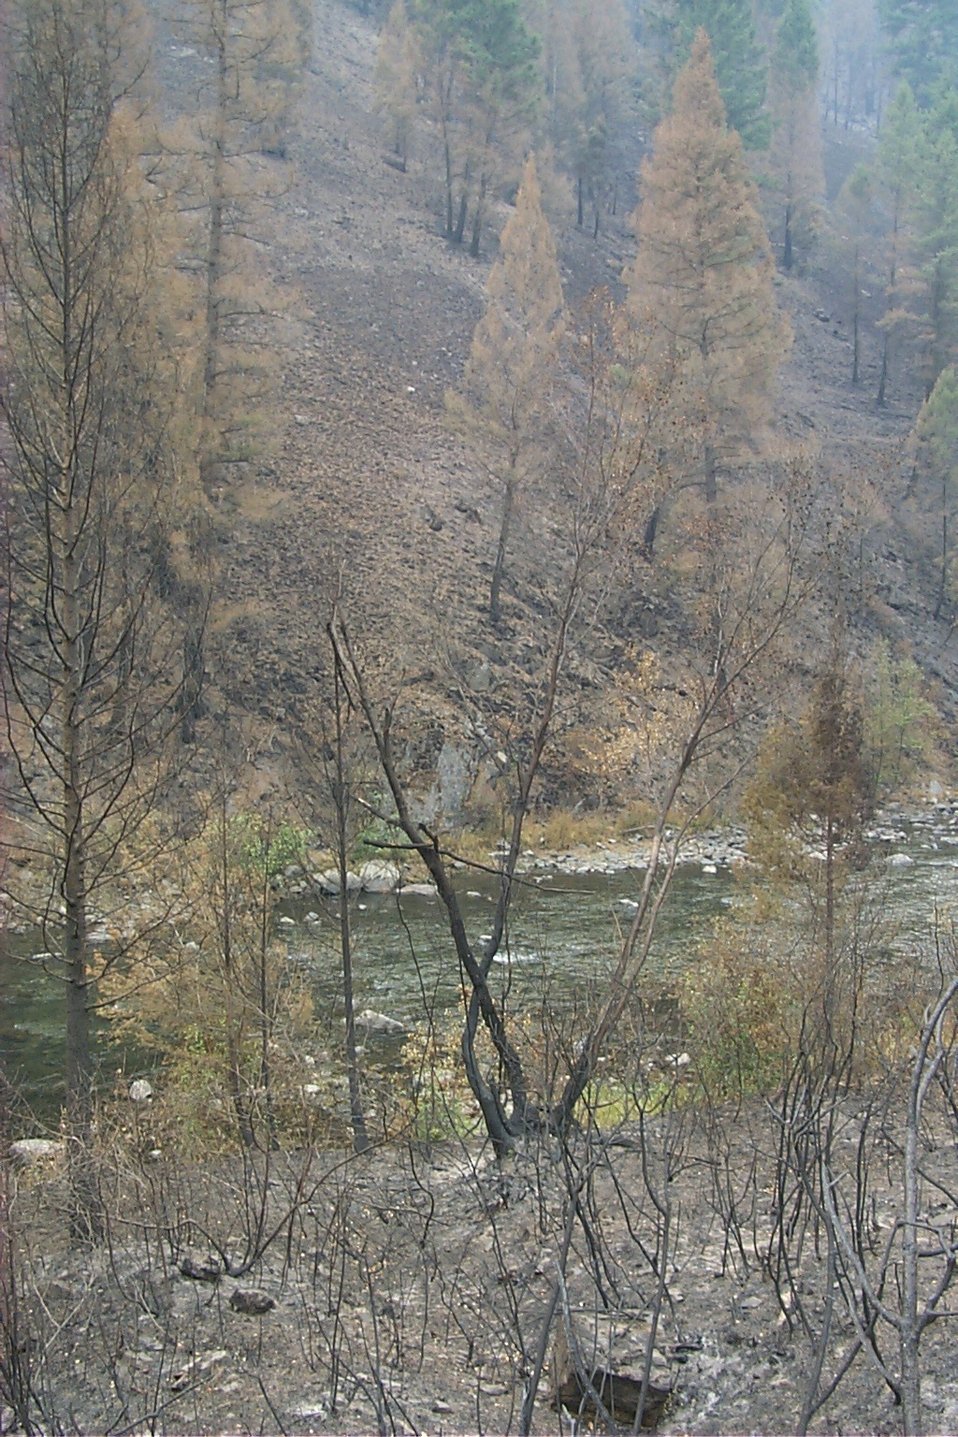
Burn area Fire Clearwater Fire Salmon Field Office USRD Upper Snake River District